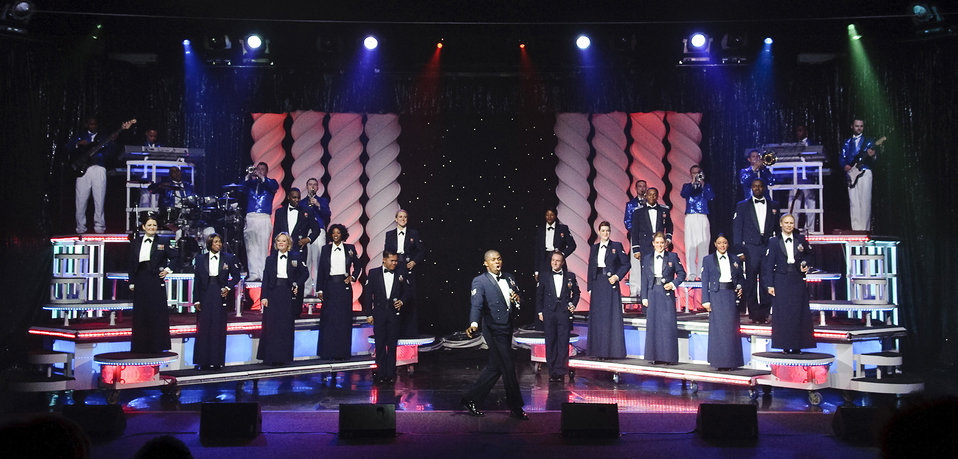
TIB wraps up tour

Staff Sgt. James Alston performs during the final concert of the 2010